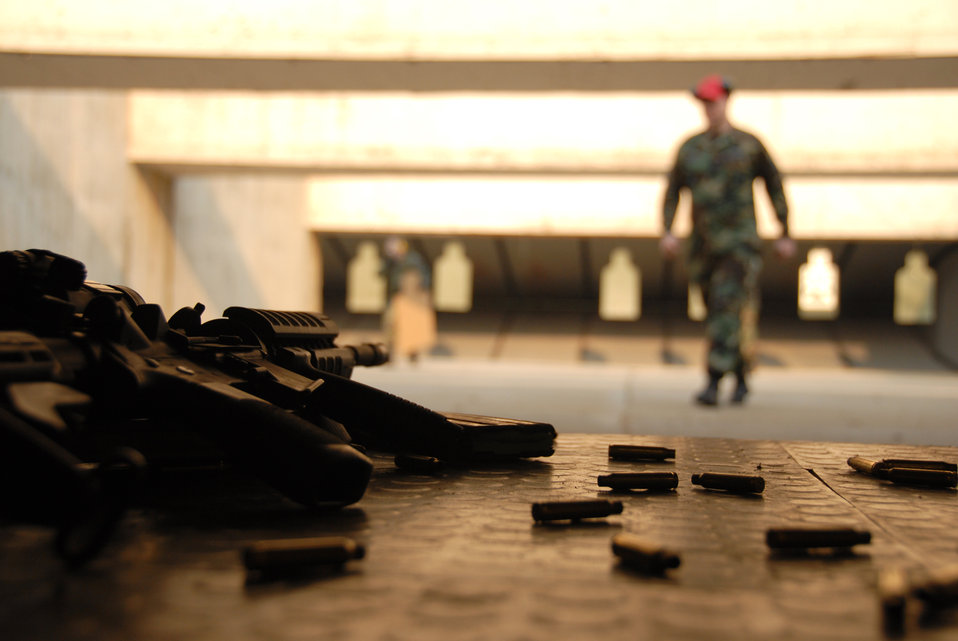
Keep firing

Airmen test their skills at the Osan Air Base, South Korea, shooting range March 15. .